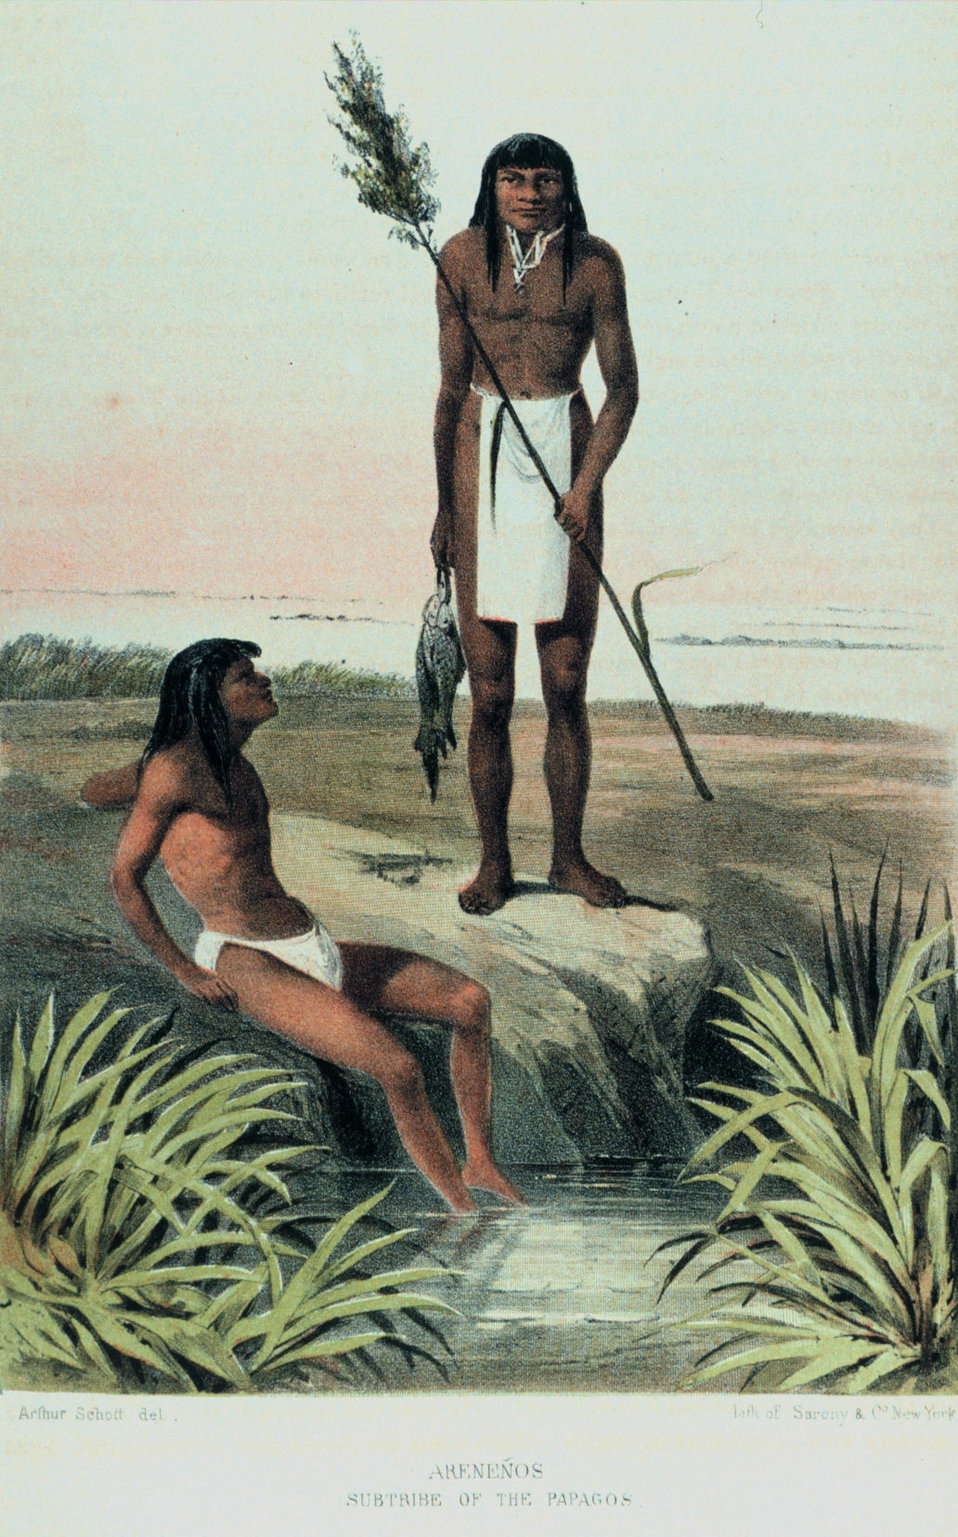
Arenenos, subtribe of the Papagos. In: 'United States and Mexican Boundary Survey. Report of William H. Emory ....' Washington. 1857. Volume I. P. 123. Library Call Number F786 .U45 1857.